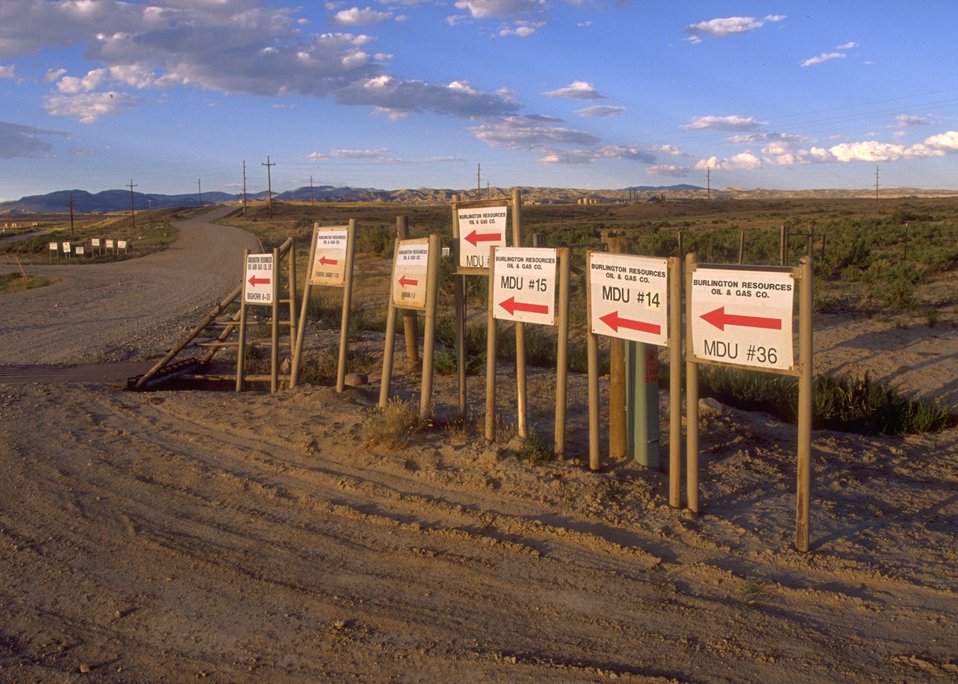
Signs showing location of drill units, Casper Field Office.